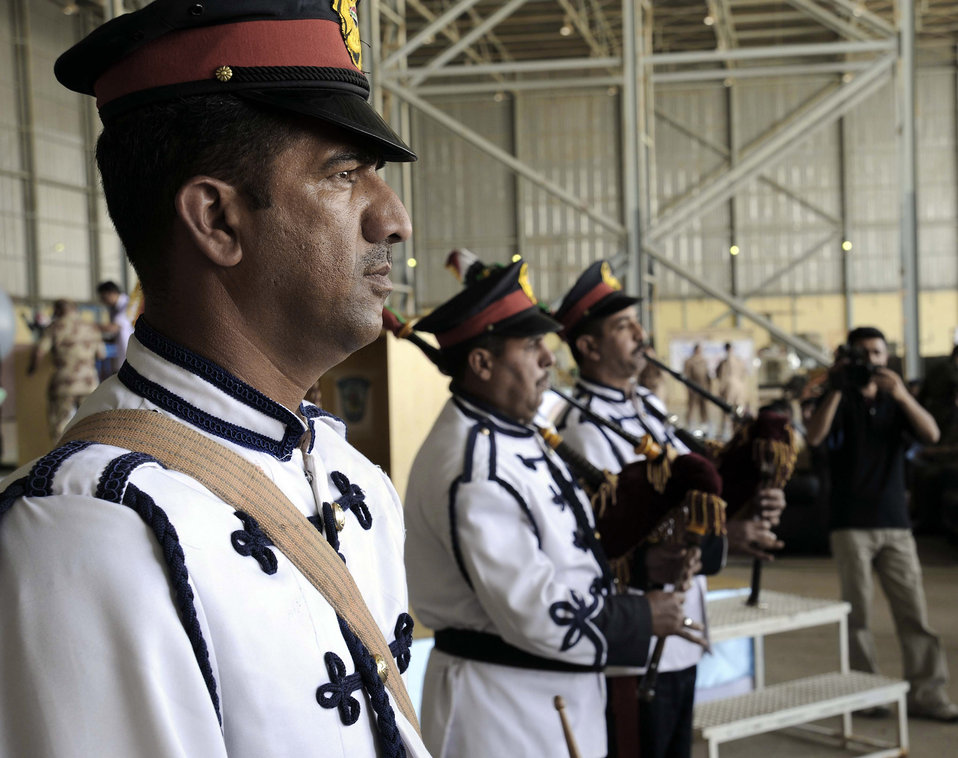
Iraqis celebrate 78th annual Air Day

An Iraqi air force band plays for the crowd at the 78th annual Iraqi Air Day at New al-Muthana Air Base April 22. Iraqi officials, to include the Iraqi minister of defense and the Iraqi air force chief of staff, spoke to the crowd on how far the Iraqi air force has come in the past few years.